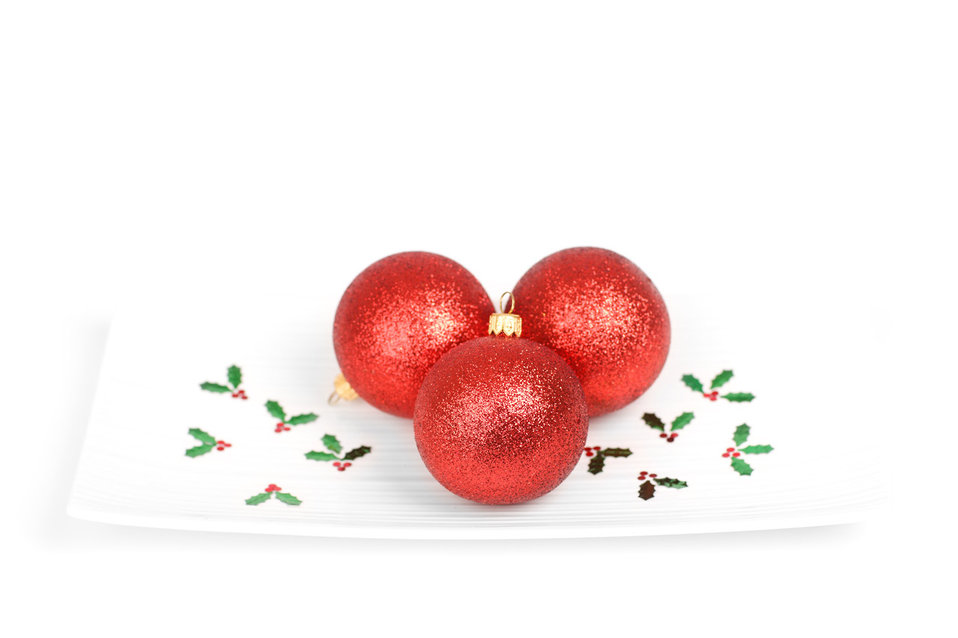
Red baubles on plate

Three red baubles with holly decoration on a plate isolated on white background.